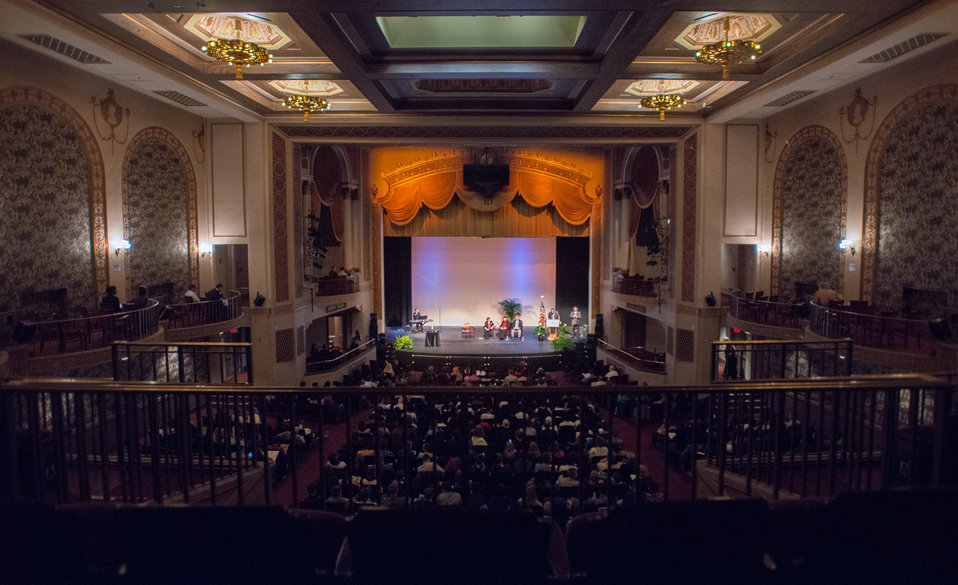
The 2013 Federal Inter-Agency Holocaust Remembrance Day, at the Lincoln Theater, on Wednesday, April 17, 2013, in Washington, D.C. The moderator is United States Holocaust Memorial Museum Division of the Senior Historian Director Peter Black, Ph.D., at podium or seated on left, and the guest speakers, left to right, are Theresienstadt Concentration Camp Czech Jewish Holocaust Survivor Ela Stein-Weissberger, and German Jewish Holocaust Survivor Inge Auerbacher; and Dachau Concentration Camp Liberator Jimmy Gentry. Since the 1979 President’s Commission on the Holocaust, an annual proclamation signed by the President of the United States recognizes the importance of remembering the atrocities of the Holocaust that should never be forgotten or be ignored.